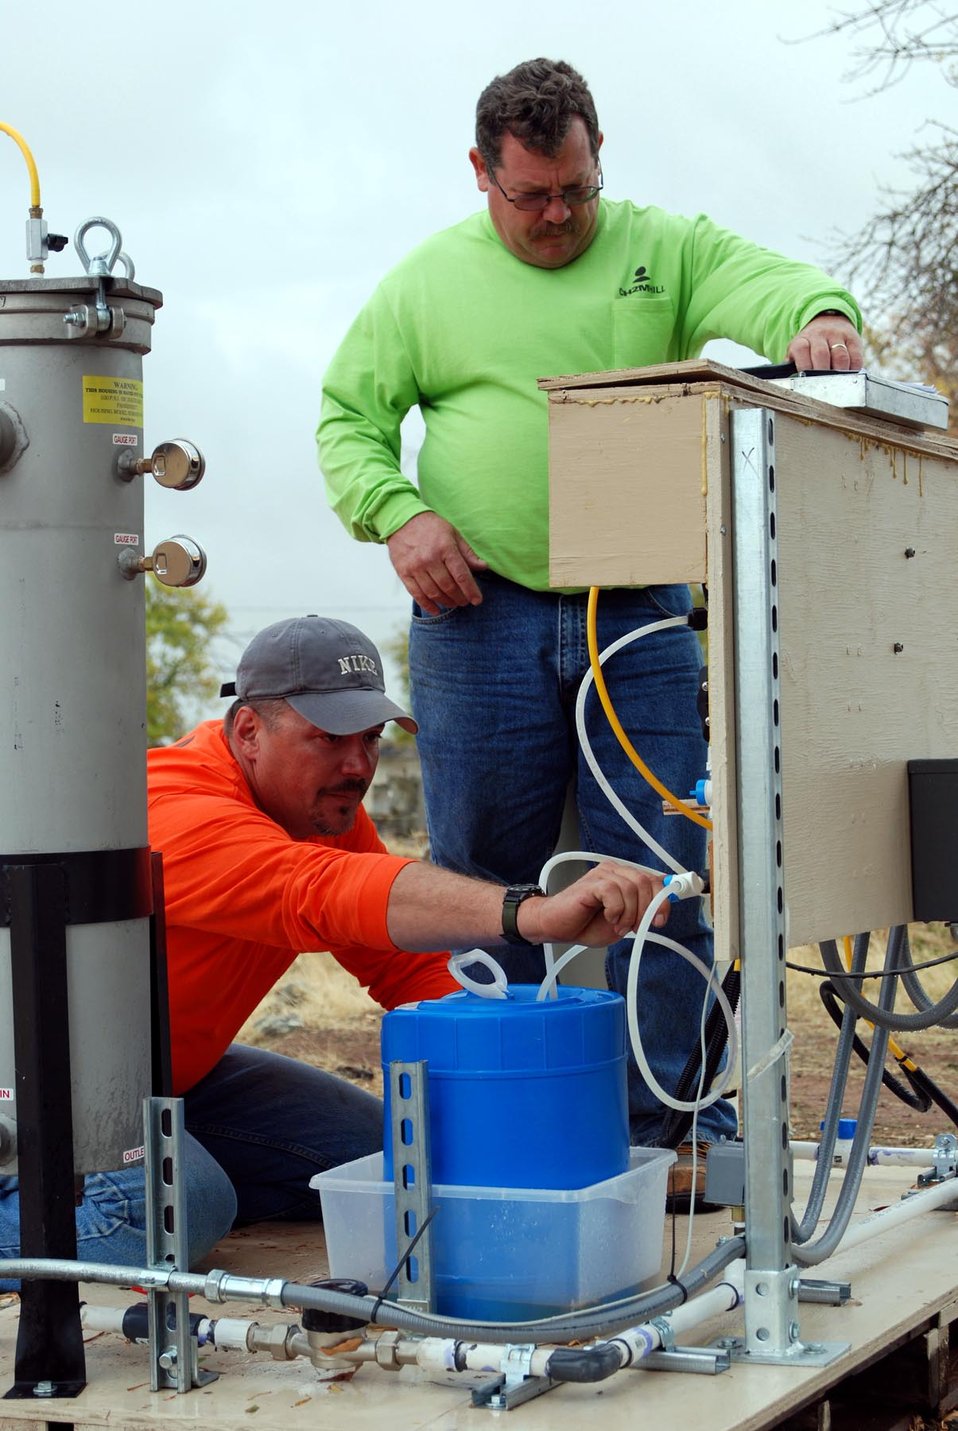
Beale expands environmental cleanup ability

Kevin Roberts (left) and Chris Goodrich check the calibration of bleach injection pumps and collect data from pump controllers at a treatment skid Oct. 16 at Site 31 at Beale Air Force Base, Calif. Mr. Roberts is a CH2M HILL environmental technologist, and Mr. Goodrich is a CH2M HILL remedial treatment systems construction manager.